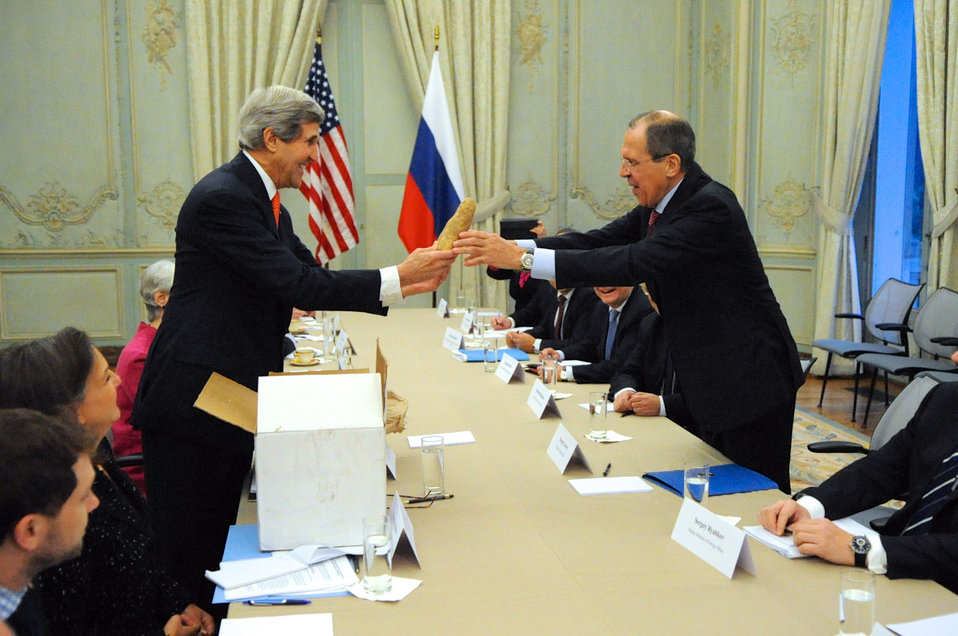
Secretary Kerry Presents Russian Foreign Minister Lavrov With a Giant Pair of Idaho Potatoes

U.S. Secretary of State John Kerry presents Russian Foreign Minister Sergey Lavrov with a pair of giant Idaho potatoes -- once a subject of discussion between them -- before a bilateral meeting with their respective staffs in Paris, France, on January 13, 2014.